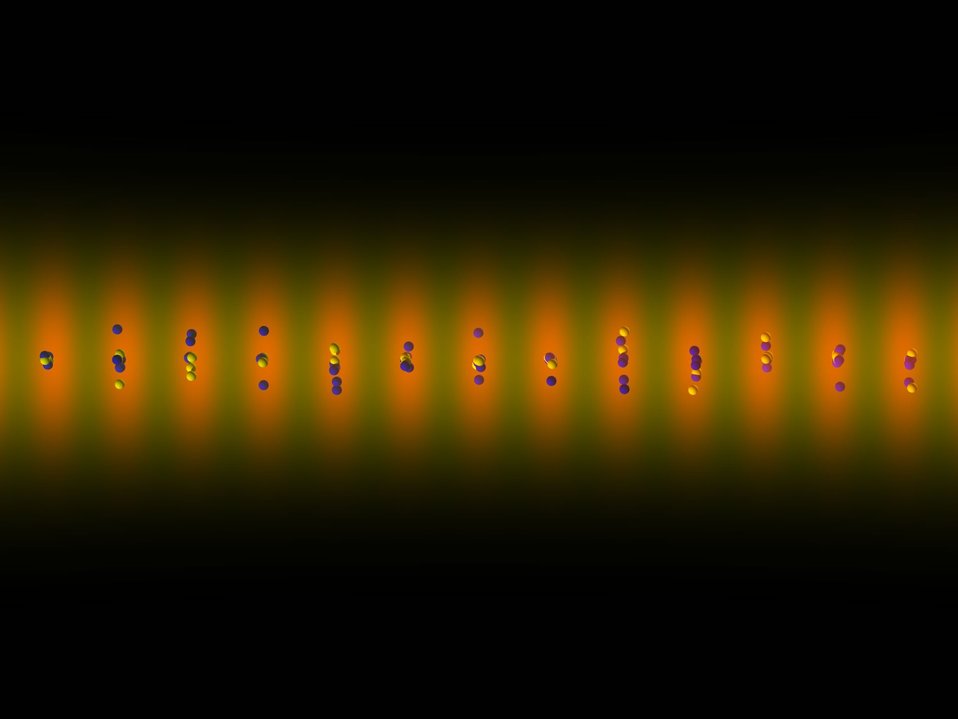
Experimental Atomic Clock; ytterbium atoms

The lattice of laser beams traps small numbers of ytterbium atoms in pancake-shaped 'wells.' A yellow laser excites the atoms so that they switch between lower (blue) and higher (yellow) energy levels.